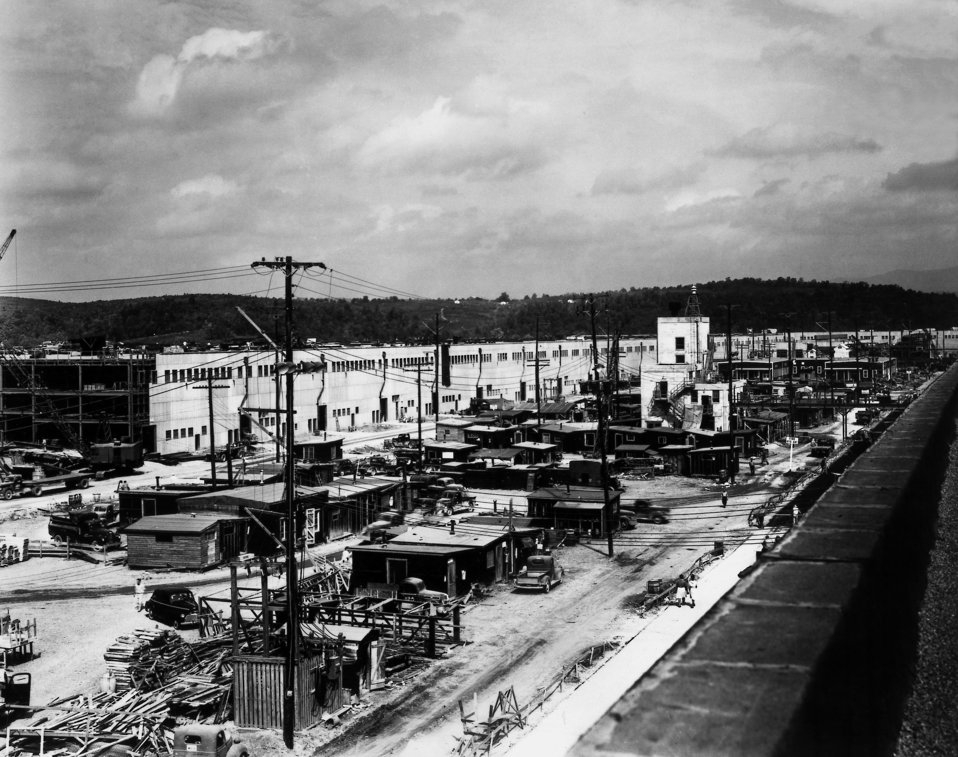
Early Construction of K-25 Building

91-2263 DOE photo by Ed Westcott 1944 Oak Ridge Tennessee